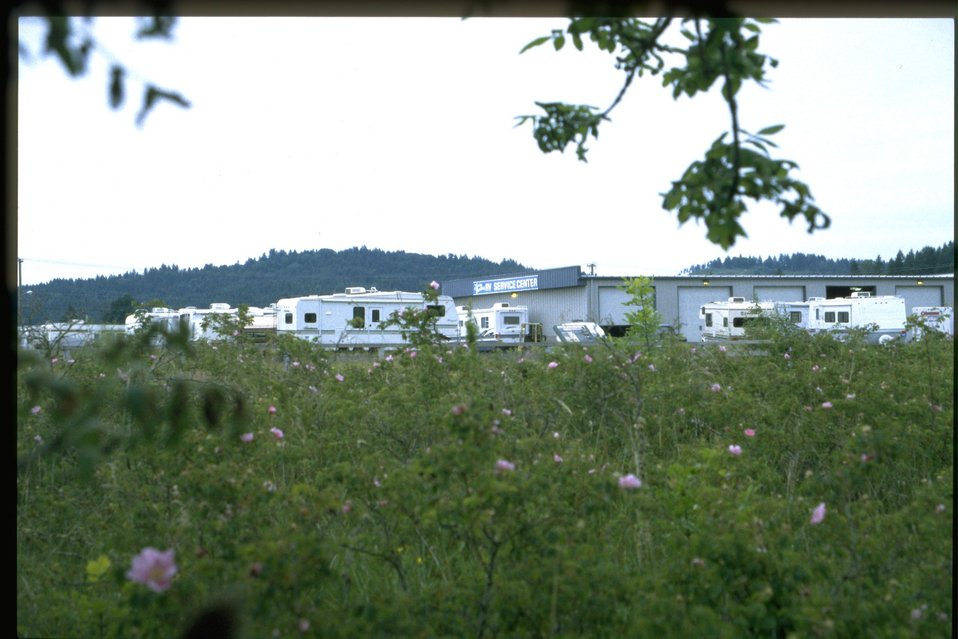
Wild roses in an urban setting.